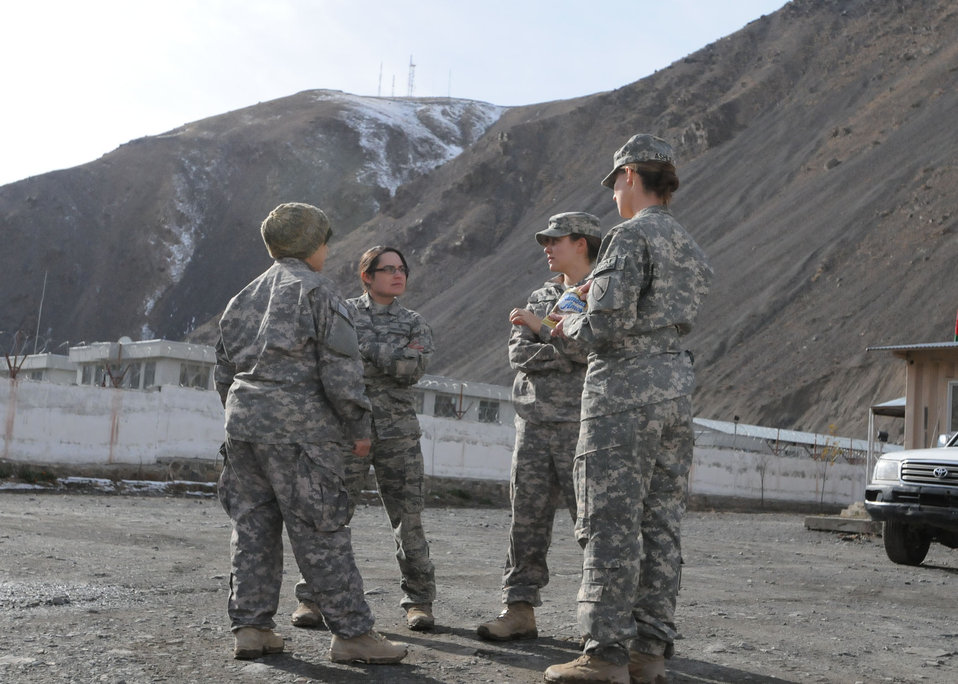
Visiting Afghan women

Servicemembers from a Provincial Reconstruction Team at Bagram Airfield, Afghanistan, traveled to Forward Operating Base Lion in the Panjshir Valley to meet with Afghan women there. Female servicemembers deployed to Forward Operating Base Lion work hand in hand with the local Afghan women, teaching them things like first aid and how to increase their crop output.